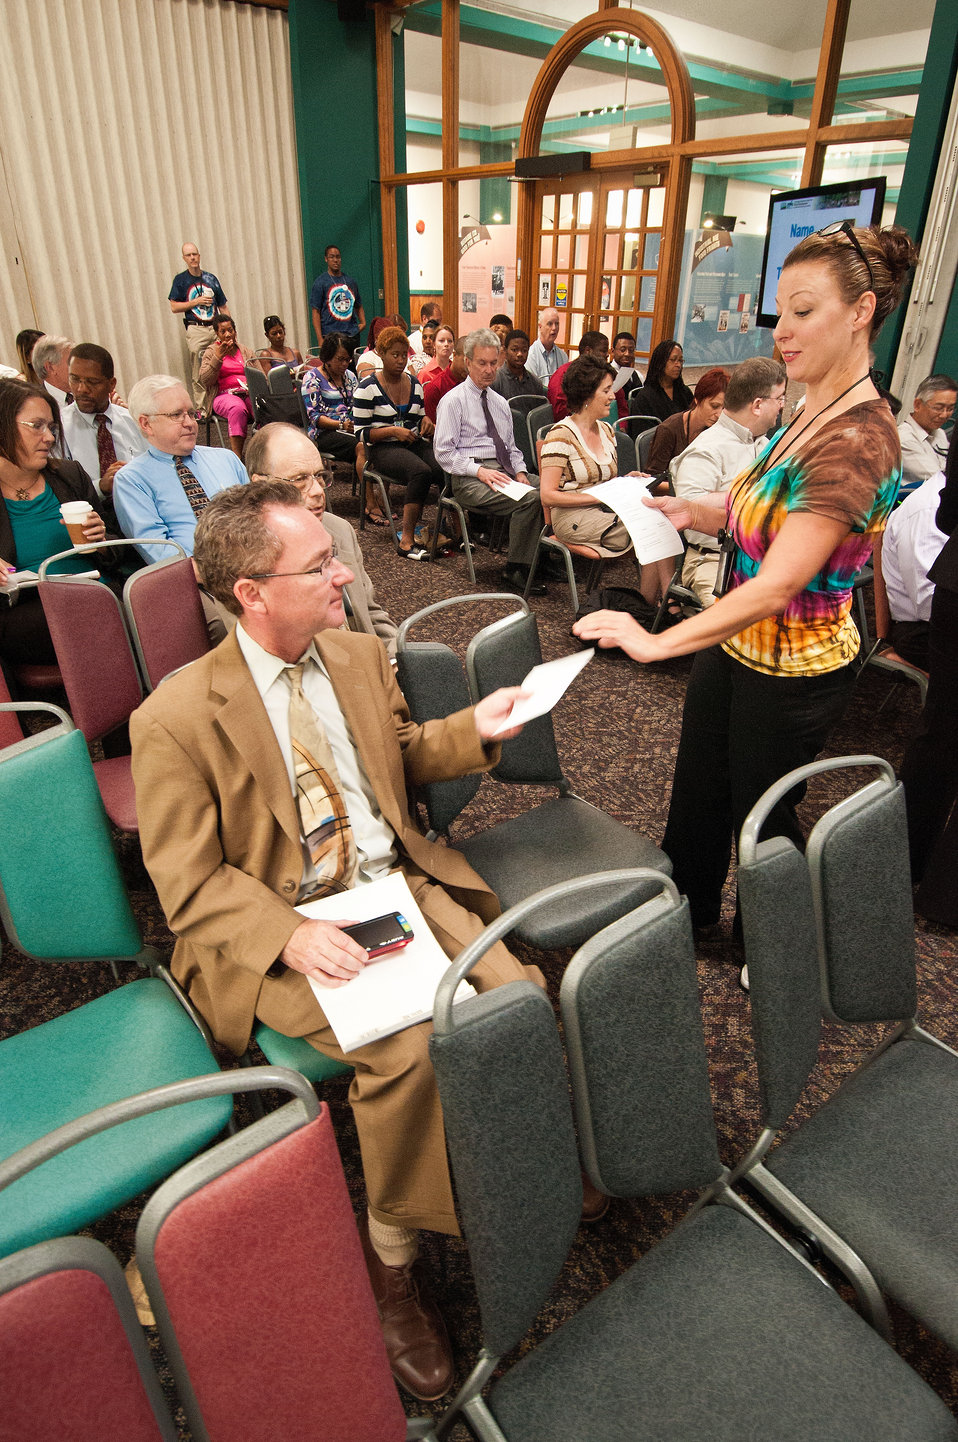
Human Resources Policy Branch Chief Leslie McBroom distributes questionnaires associated with the tele-work procedures to employees during one of many forums held for the Rural Development Cultural Transformation Day event held in Washington, D.C. on Thursday, July 12, 2012.